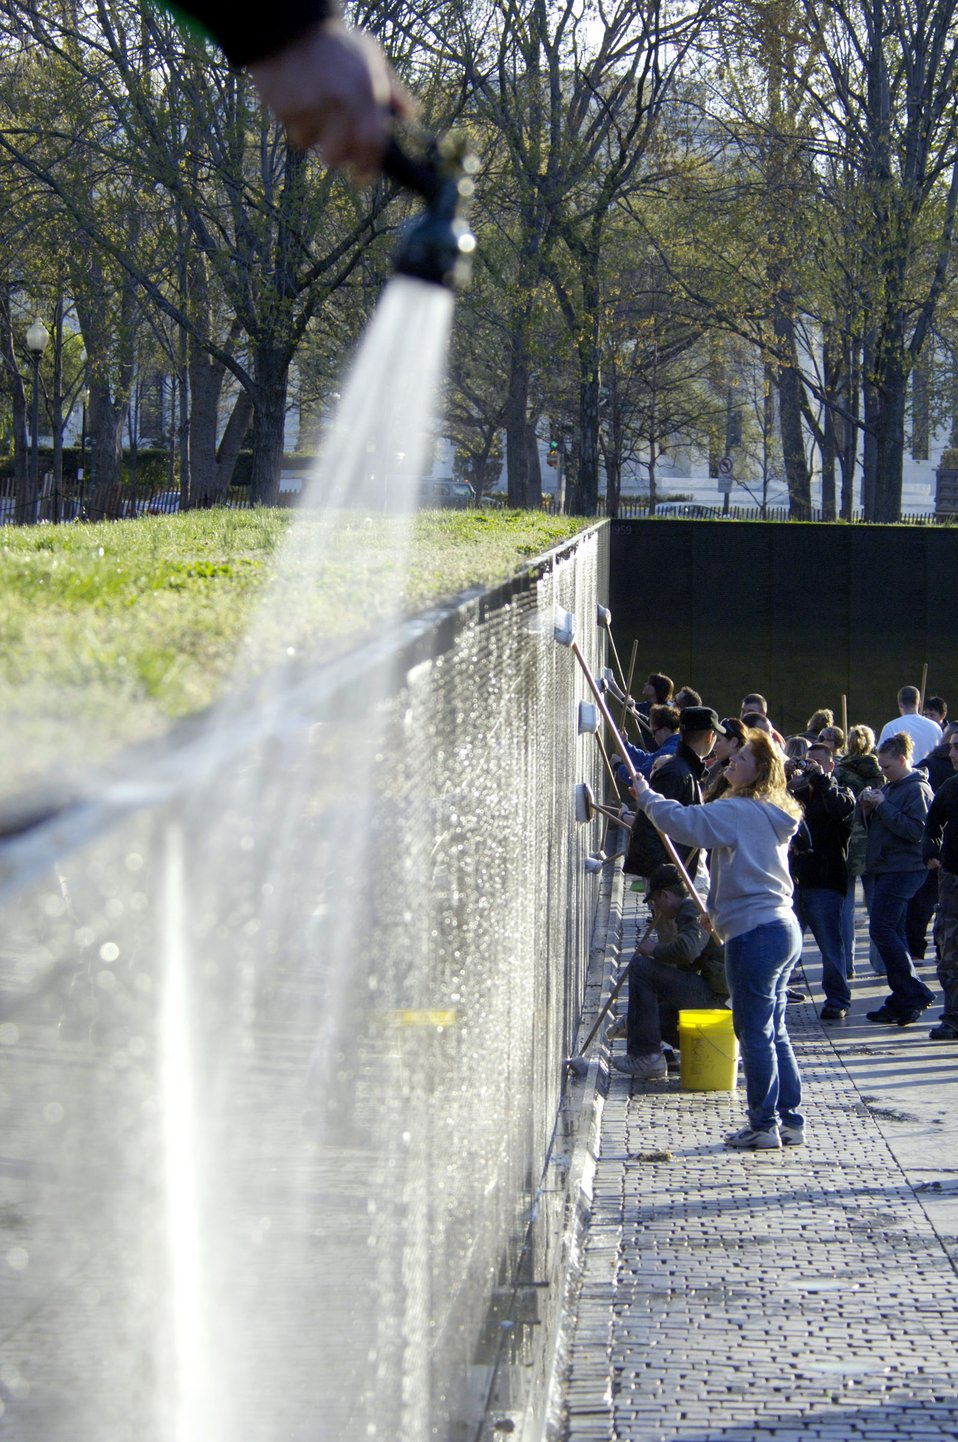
Cleaning the Wall

Members of the Air Force Sergeants Association clean the Vietnam Veterans Memorial in Washington, D.C., April 21. Volunteers from Charleston, Shaw, Pope, Seymour Johnson, Langley and Bolling Air Force Bases were among those who participated in the event.